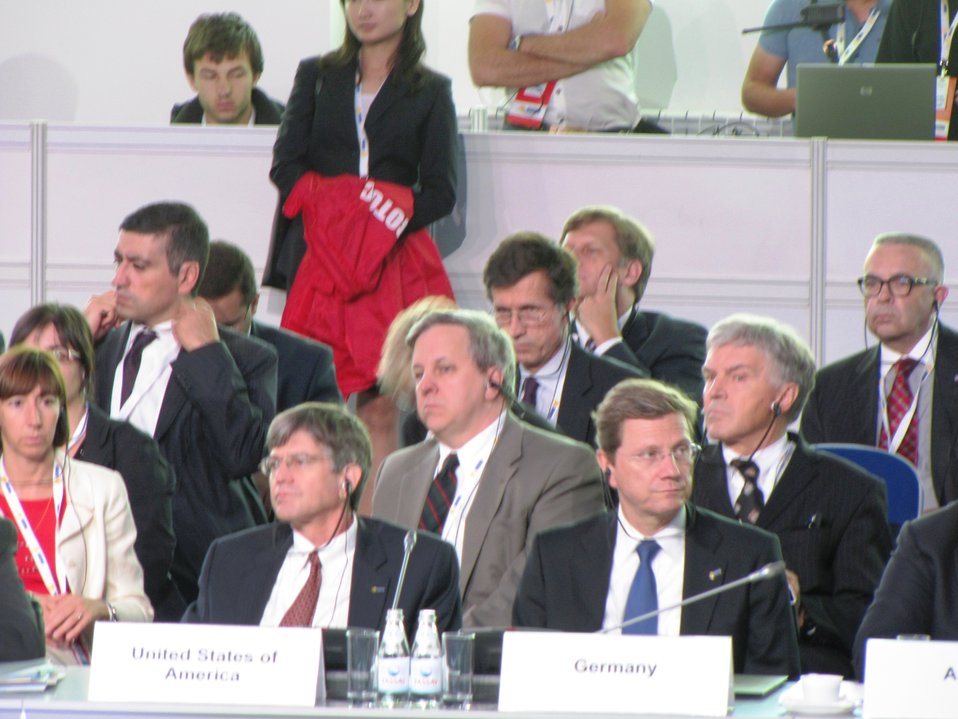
Deputy Secretary Steinberg, Ambassador Kelly, and Assistant Secretary Blake attend teh OSCE Informal Ministerial

U.S. Deputy Secretary James Steinberg, U.S. Ambassador to the OSCE Ian Kelly, and U.S. Assistant Secretary for South and Central Asian Affairs Robert O. Blake attend the OSCE Informal Ministerial in Almaty, Kazakhstan, on July 17, 2010.